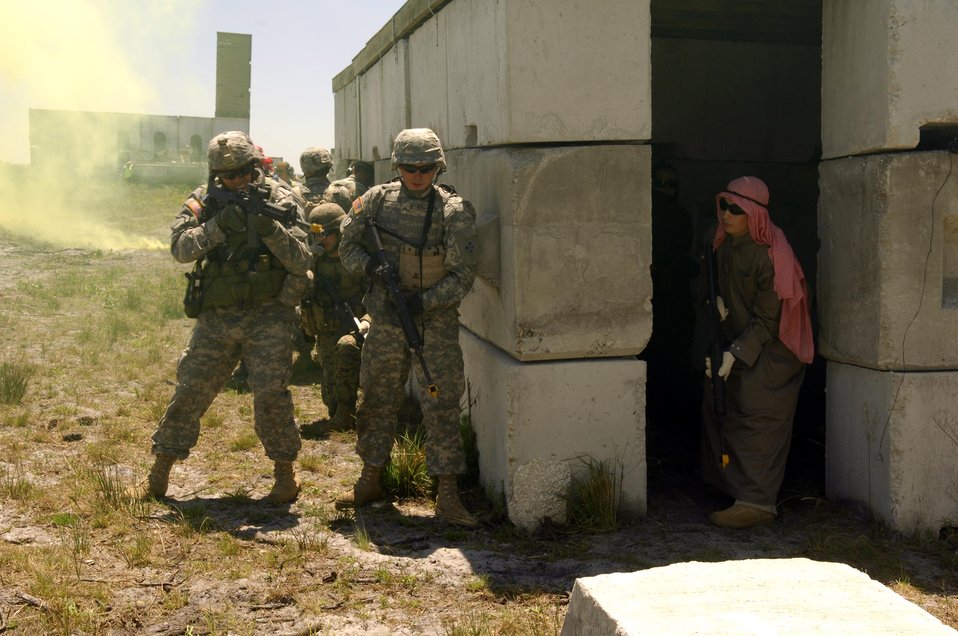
Air Force JTACs train colleagues for combat

Members of the Scout Platoon 3-67 AR, 4th ID from Ft. Hood, Texas, prepare to engage opposition forces April 17 as part of Atlantic Strike 5. Atlantic Strike is a joint forces training event involving joint terminal attack controllers from the Army, Air Force and Marines and is held semiannually at the Avon Park Air Ground Training Complex in Avon Park, Fla.